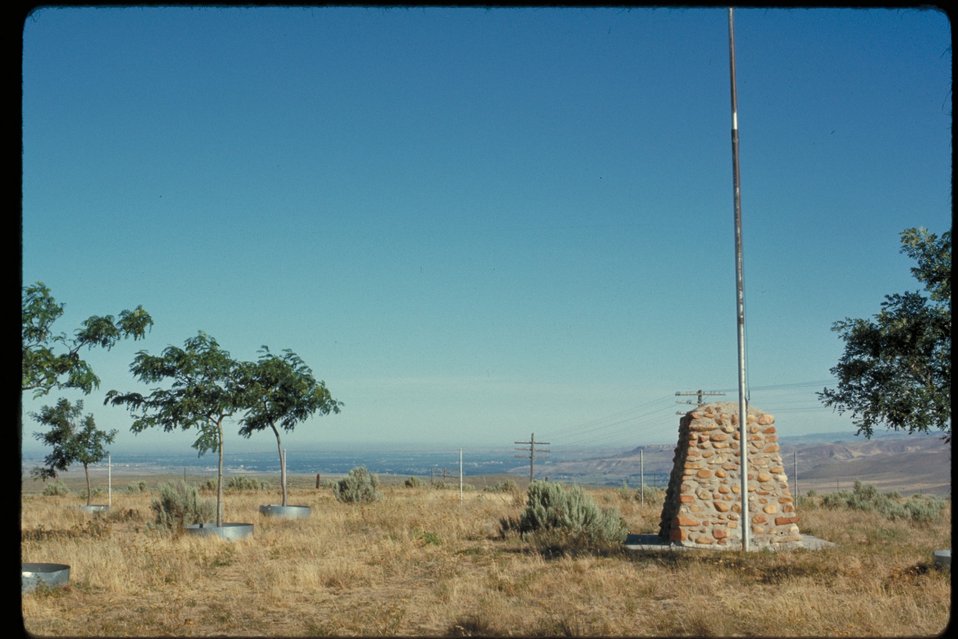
Bonneville Point Marker Oregon Trail Lower Snake River District